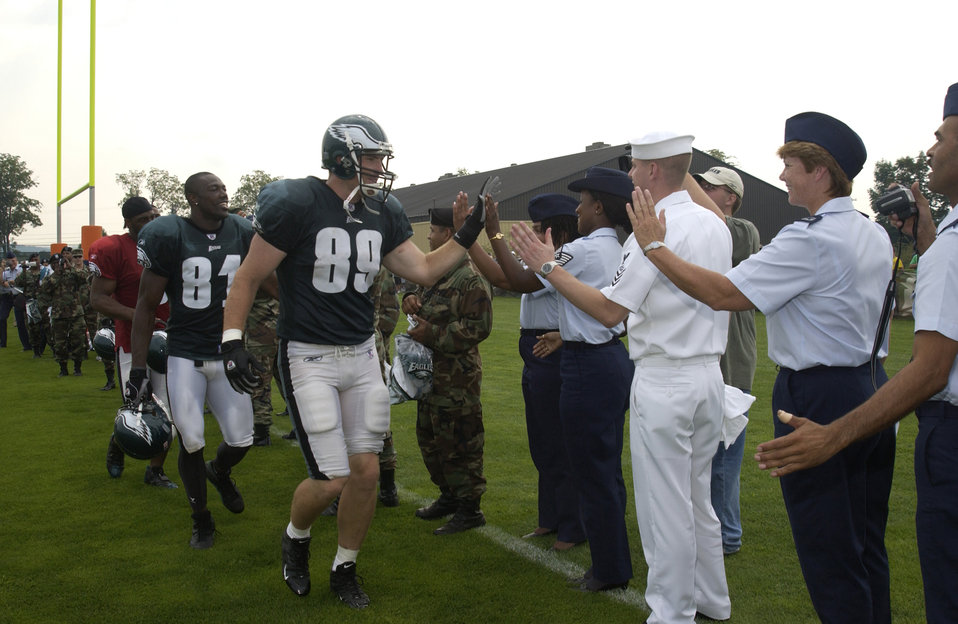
Eagles show appreciation

BETHLEHEM, Pa. -- Philadelphia Eagles Tight End Chad Lewis, Wide Receiver Terrell Owens, and Quarterback Donovan McNabb,